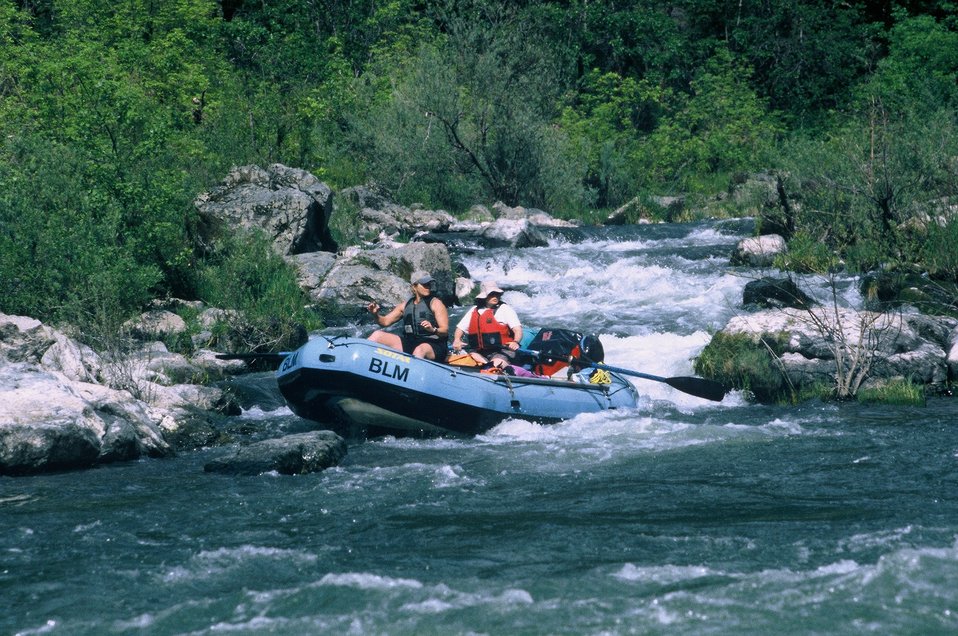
Rainie Falls Fish Ladder Wild section of the Rogue River from Grave Creek to Foster Bar. 3100 cfs at Grants Pass and 5300 at Agness.